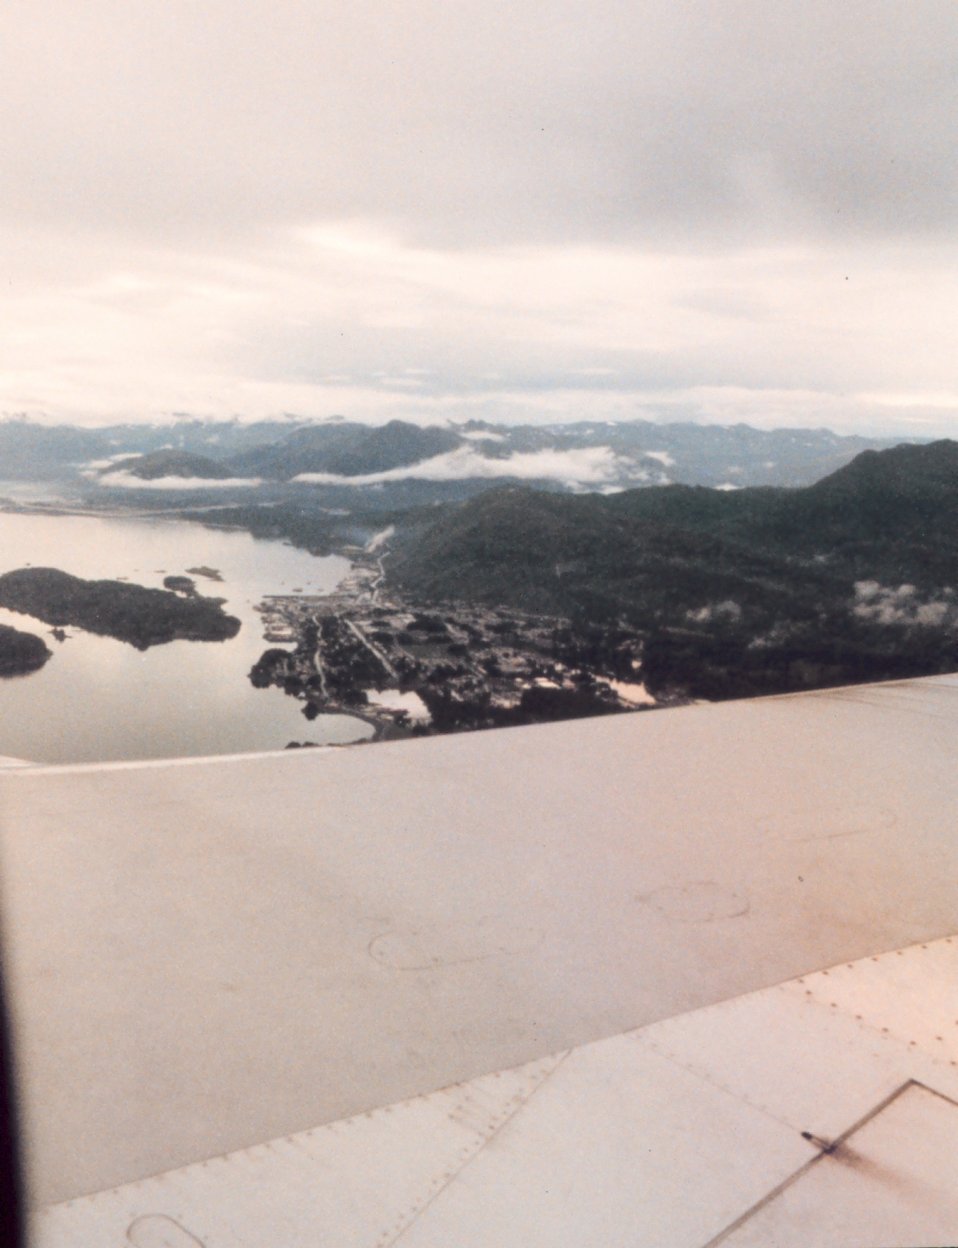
Looking north over the wing to Kodiak